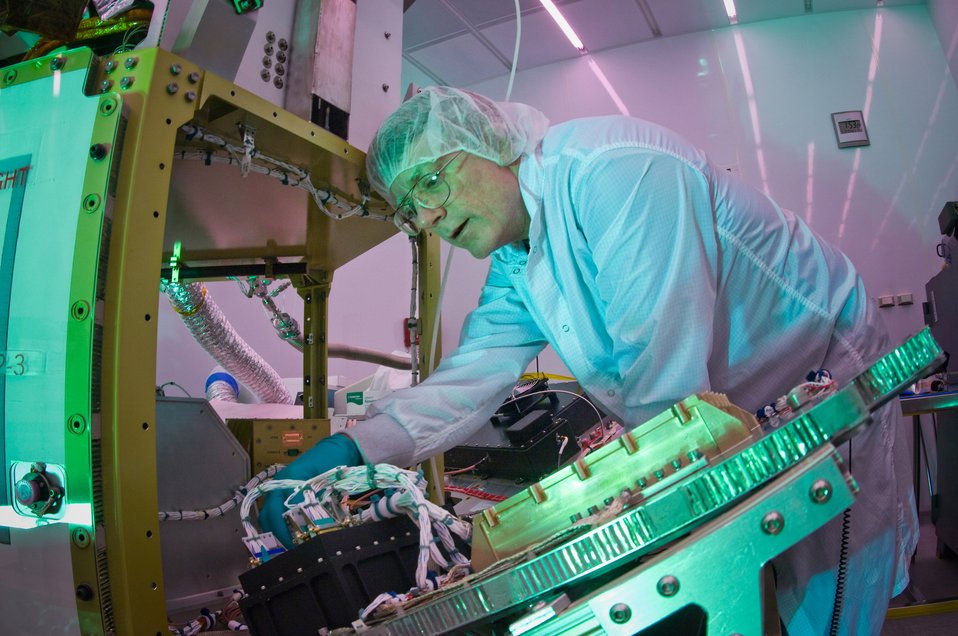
Re-volting tests

Martin Leahy performs voltage and continuity tests on a tactical satellite, known as Tactical Satellite-3, at the Space Vehicle Directorate at the Air Force Research Laboratory, Kirtland Air Force Base, N.M. The satellite is scheduled to be launched in October. Mr. Leahy is a field engineer with ATA Aerospace.